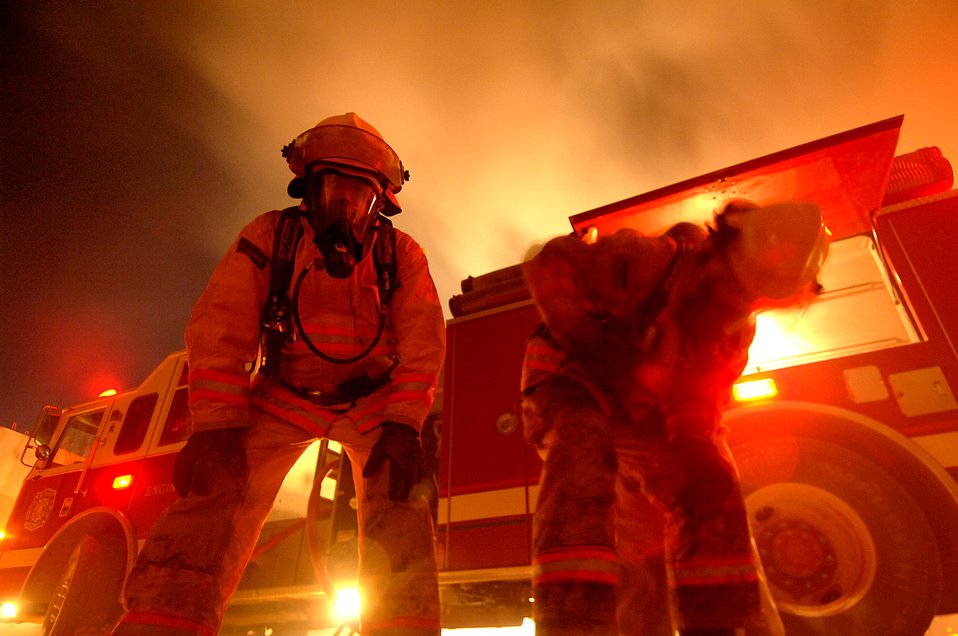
Firefighters battle blaze in Iraq

Running low on air, firefighters from contractor Wackenhut Fire and Emergency Service get their oxygen tanks replaced while fighting a fire at Forward Operating Base Marez in Mosul, Iraq, on Thursday, June 8. The fire was at a local restaurant and jewelry store.